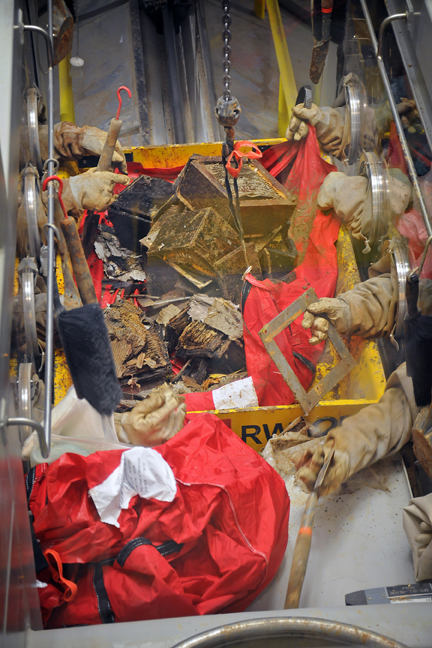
Waste sorting at the Idaho Site’s Accelerated Retrieval Project.